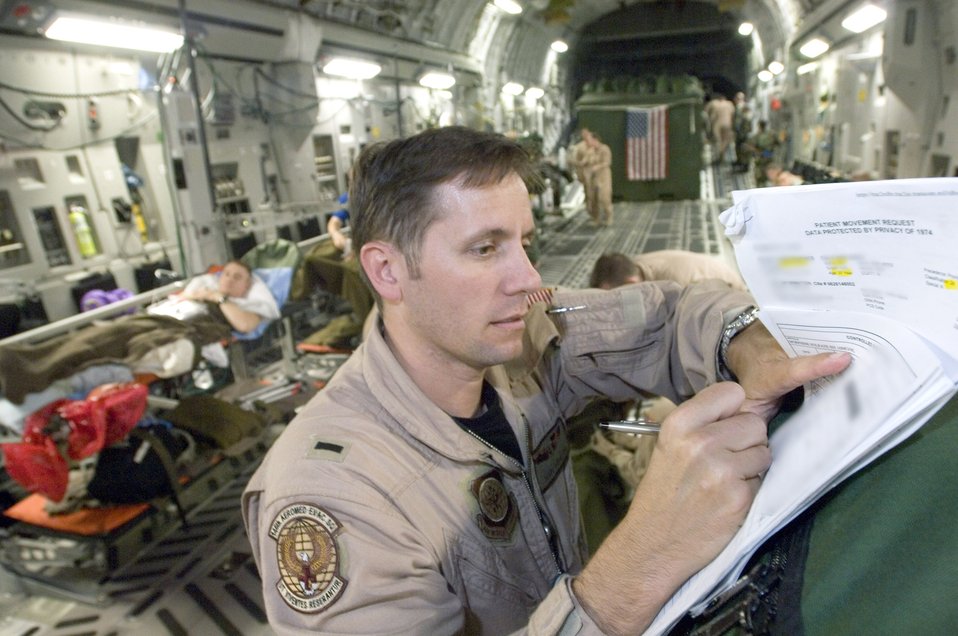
Aeromedical evacuation mission

First Lt. John Rinaldo annotates a patient's records after completing an aeromedical evacuation mission Sept. 18 on a C-17 Globemaster III. Lieutenant Rinaldo is a flight nurse serving temporary duty with the 791st Expeditionary Aeromedical Evacuation Squadron at Ramstein Air Base, Germany.